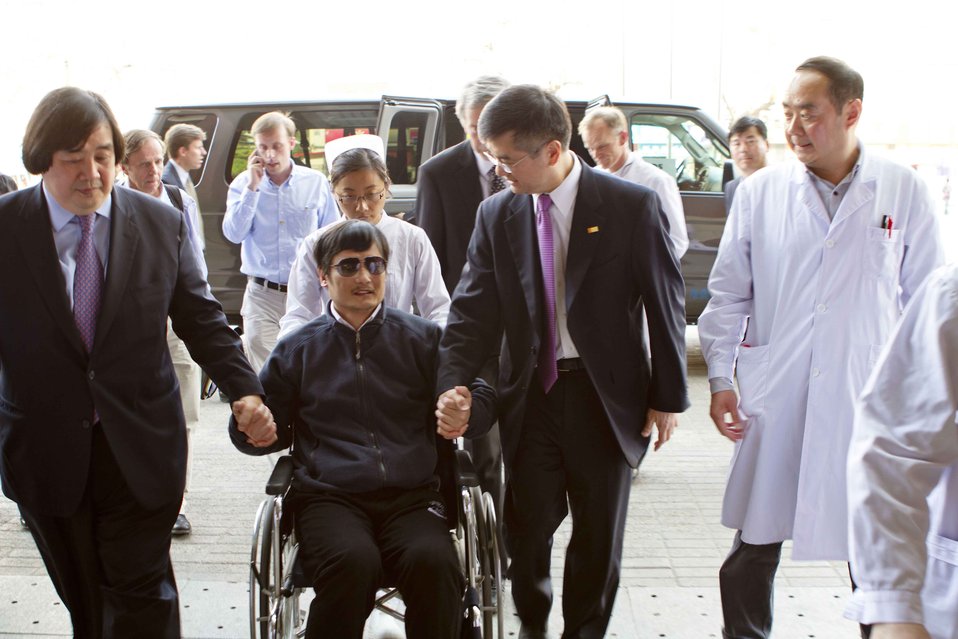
Ambassasdor Locke and Legal Adviser Koh With Chen Guangcheng

U.S. Ambassador to China Gary Locke, right; and Legal Adviser of the U.S. Department of State Harold Koh, left; with Chen Guangcheng at the U.S. Embassy in Beijing, China, on May 1, 2012.